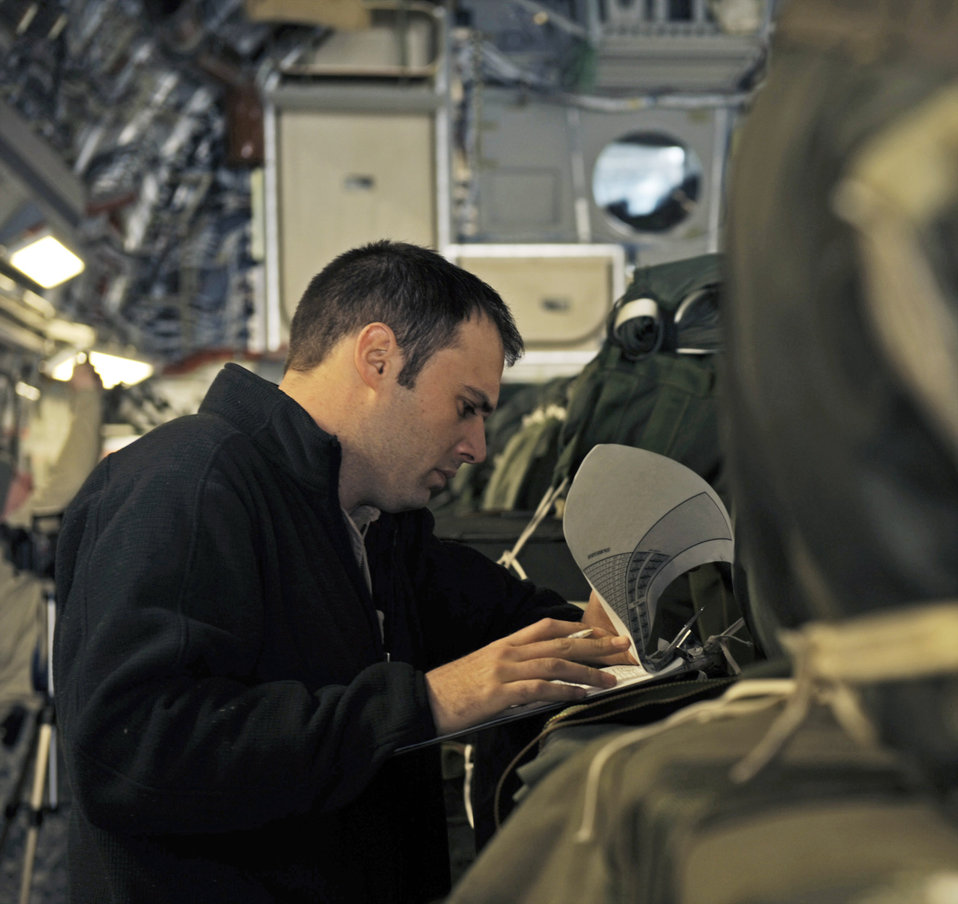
Airmen deliver 1 million pounds of supplies in 42 days

Staff Sgt. Steve Gore completes an airdrop evaluation prior to an airdrop mission on board a C-17 Globemaster III Feb. 14 over Afghanistan. Sergeant Gore is a C-17 loadmaster.